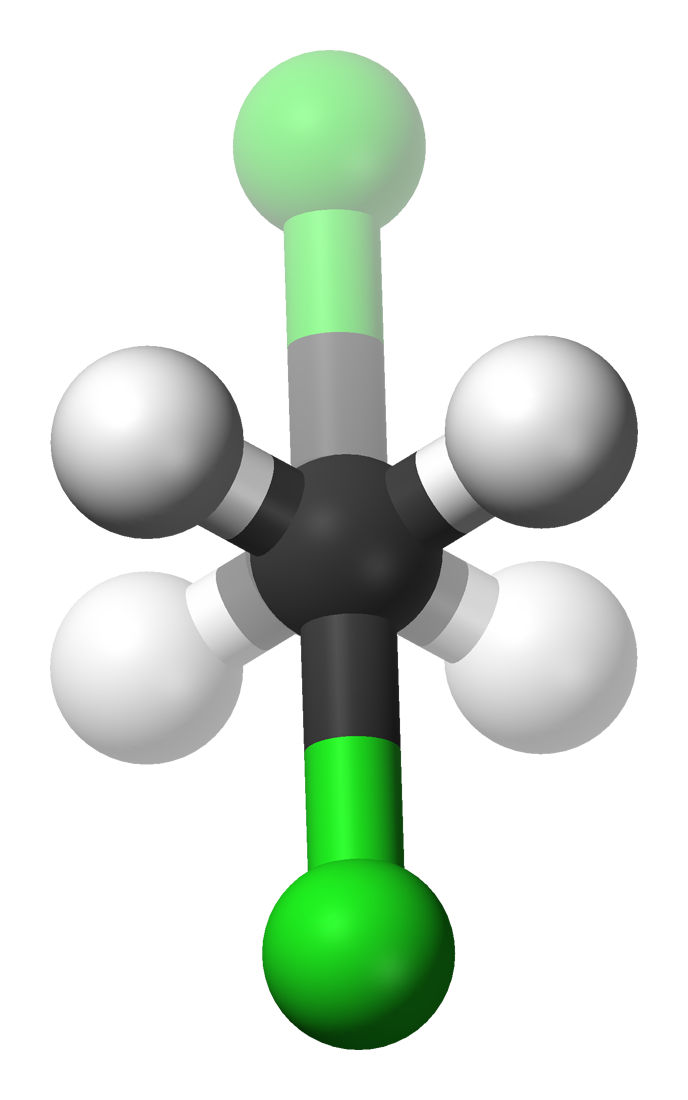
1,2-dichloroethane-anti-front-3D-balls